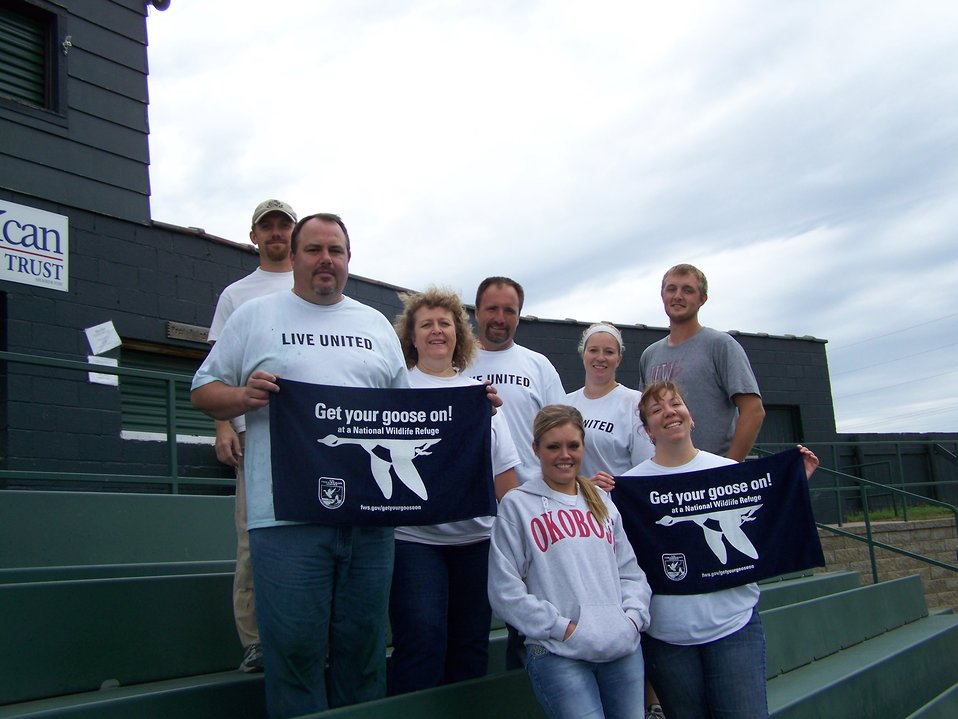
Get Your Goose On!

Photo taken at Huron Wetland Management District in east-central South Dakota.